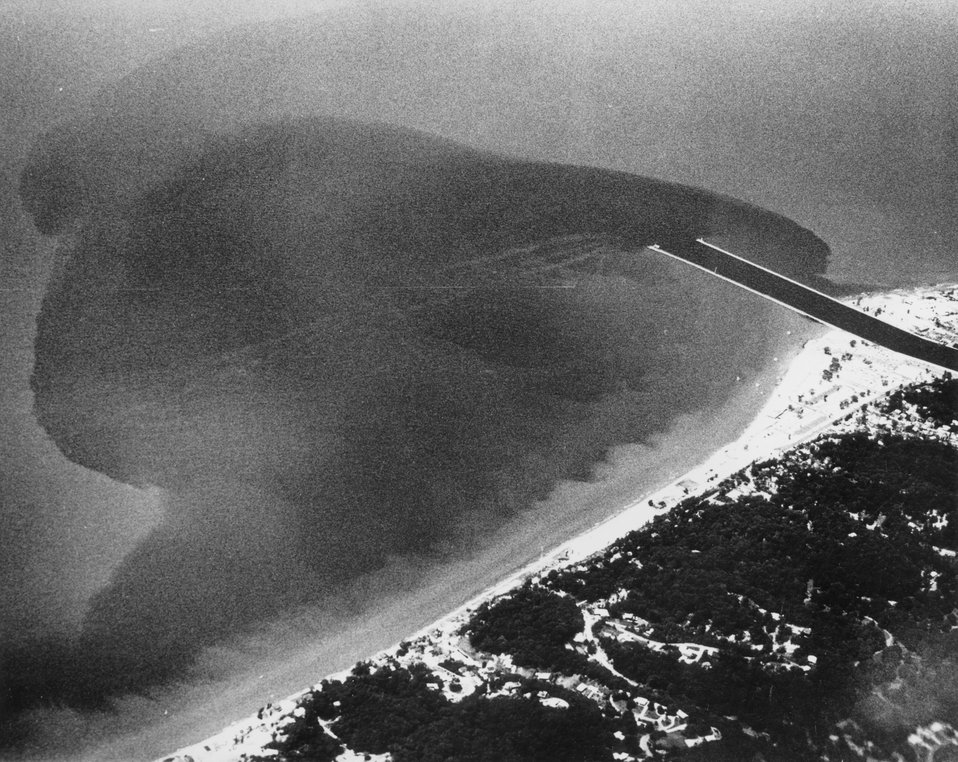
The photo shows the pollution 'plume' of the Grand River as it empties into Lake Michigan at Grand Haven.
c.1972